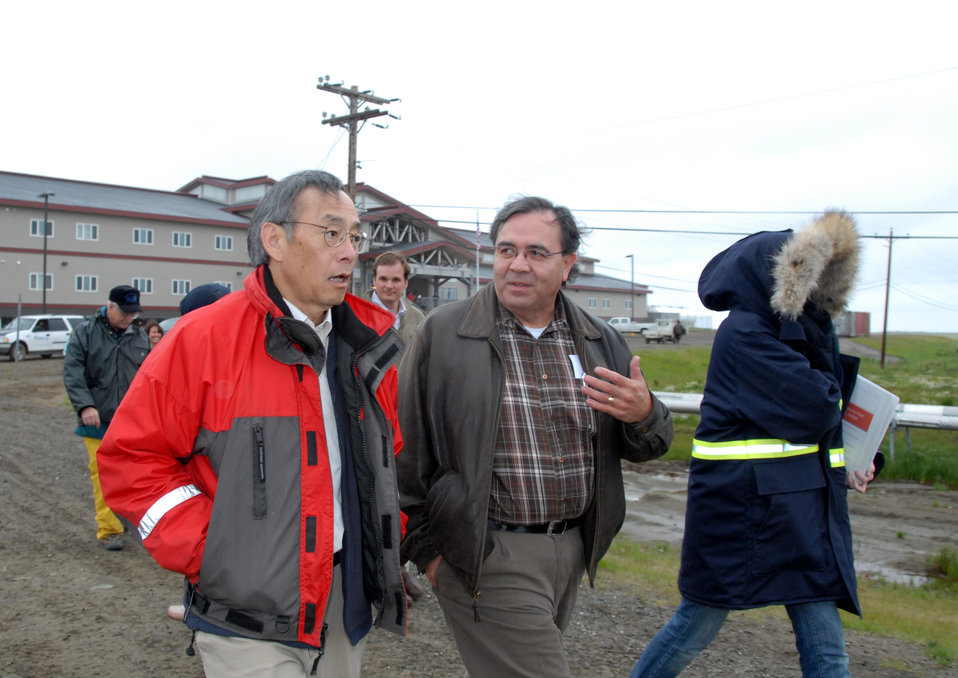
Rural Tour 0314

Rural Tour Alaska Aug 2009